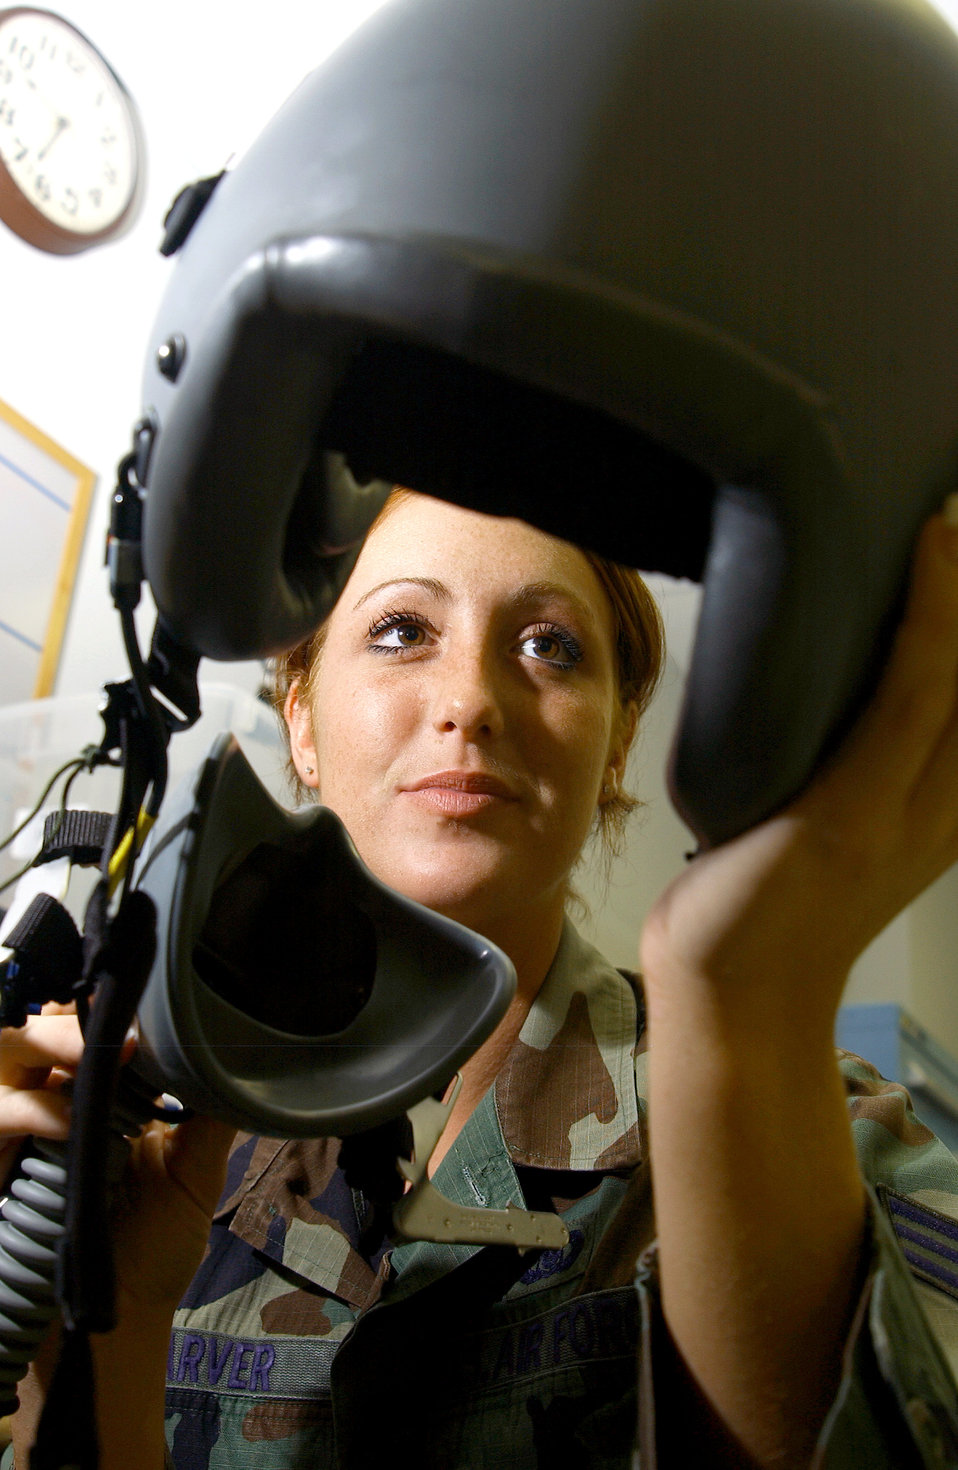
First step in saving lives

MACDILL AIR FORCE BASE, Fla. (AFPN) -- Senior Airman Corinna Carver inspects an HGU-55P helmet system. The helmet provides communication and a source of oxygen for pilots. Airman Carver is an aircrew life-support technician with the 91st Air Refueling Squadron.